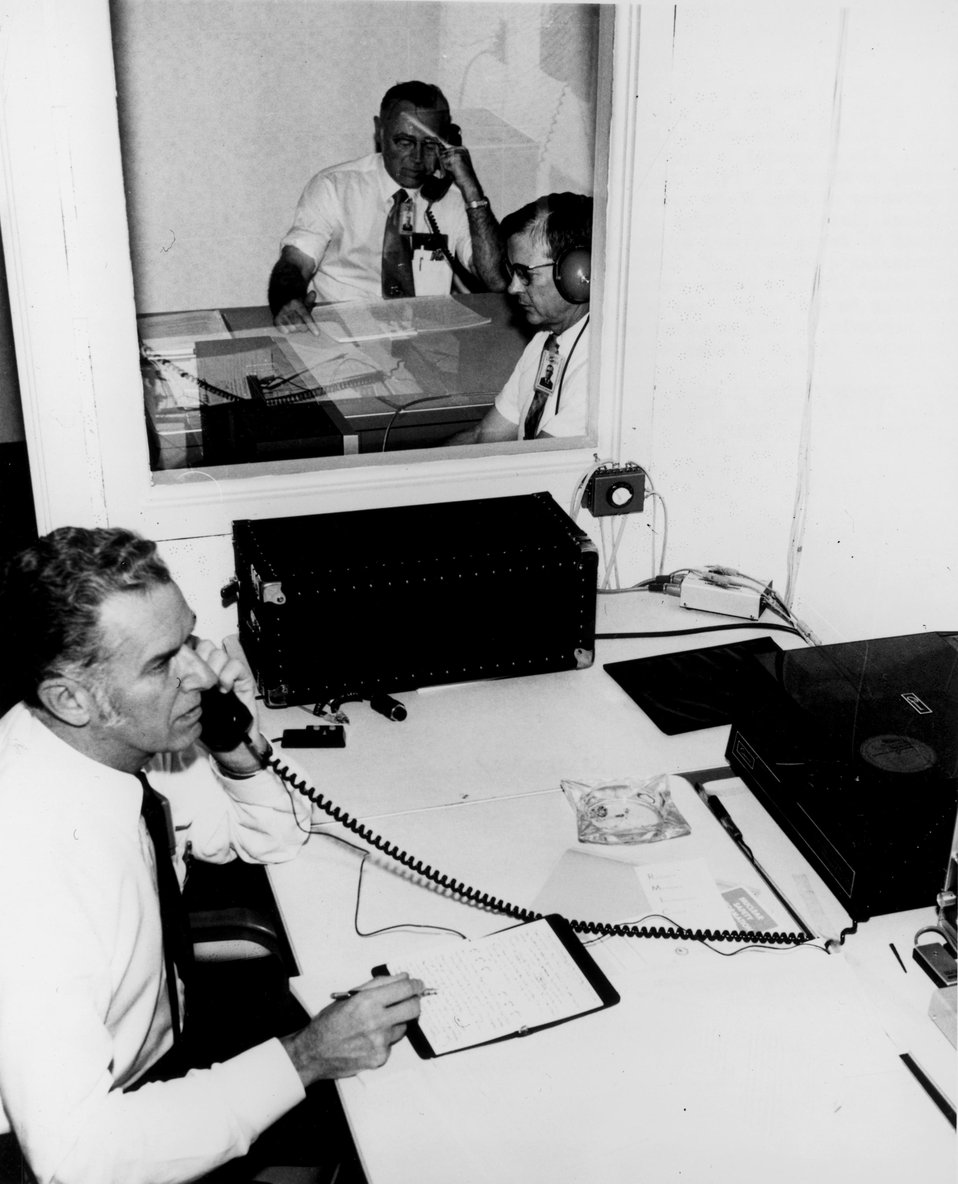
The instructors were in Oak Ridge, Tenn., and the students were in a classroom more than 400 miles away at Kent State University, Ohio, via a special telephone-amplification hookup on March 11, 1971. c. 1972